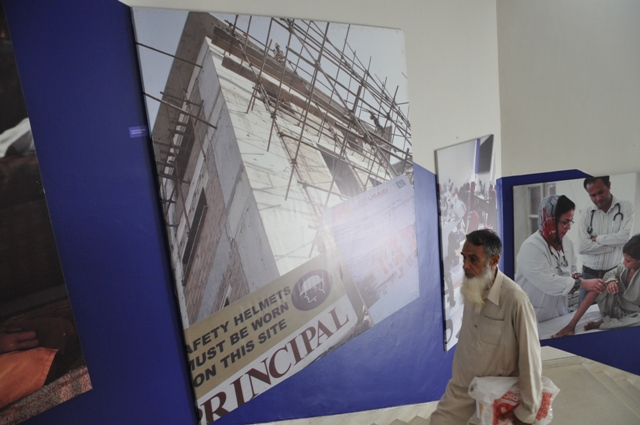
USAID Retrospective Exhibition at Alhamra Art Gallery